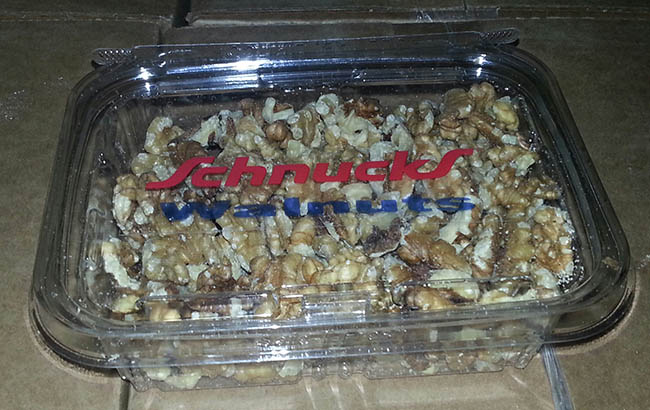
RECALLED – Walnuts

May 21, 2014 – Product Recall – Sherman Produce Recalls Bulk and Packaged Walnuts Due to Possible Health Risk.